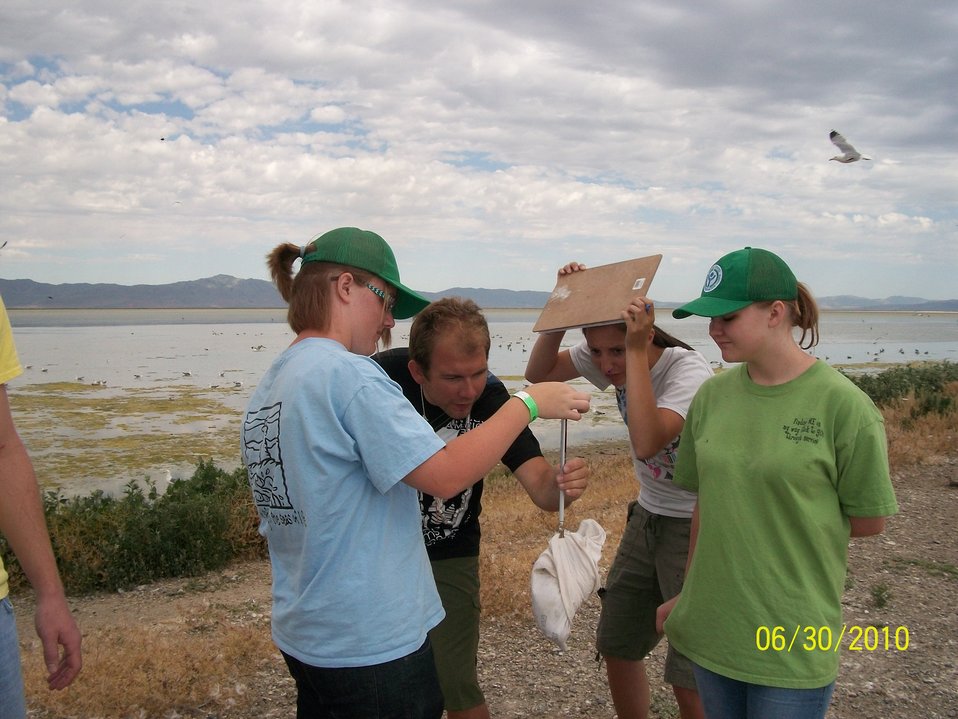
Weighing Gulls at Bear River Migratory Bird Refuge

Youth Conservation Corp students weigh a gull on Bear River Migratory Bird Refuge in Utah. The students are monitoring a California Gull colony as part of a study at Weber State University.